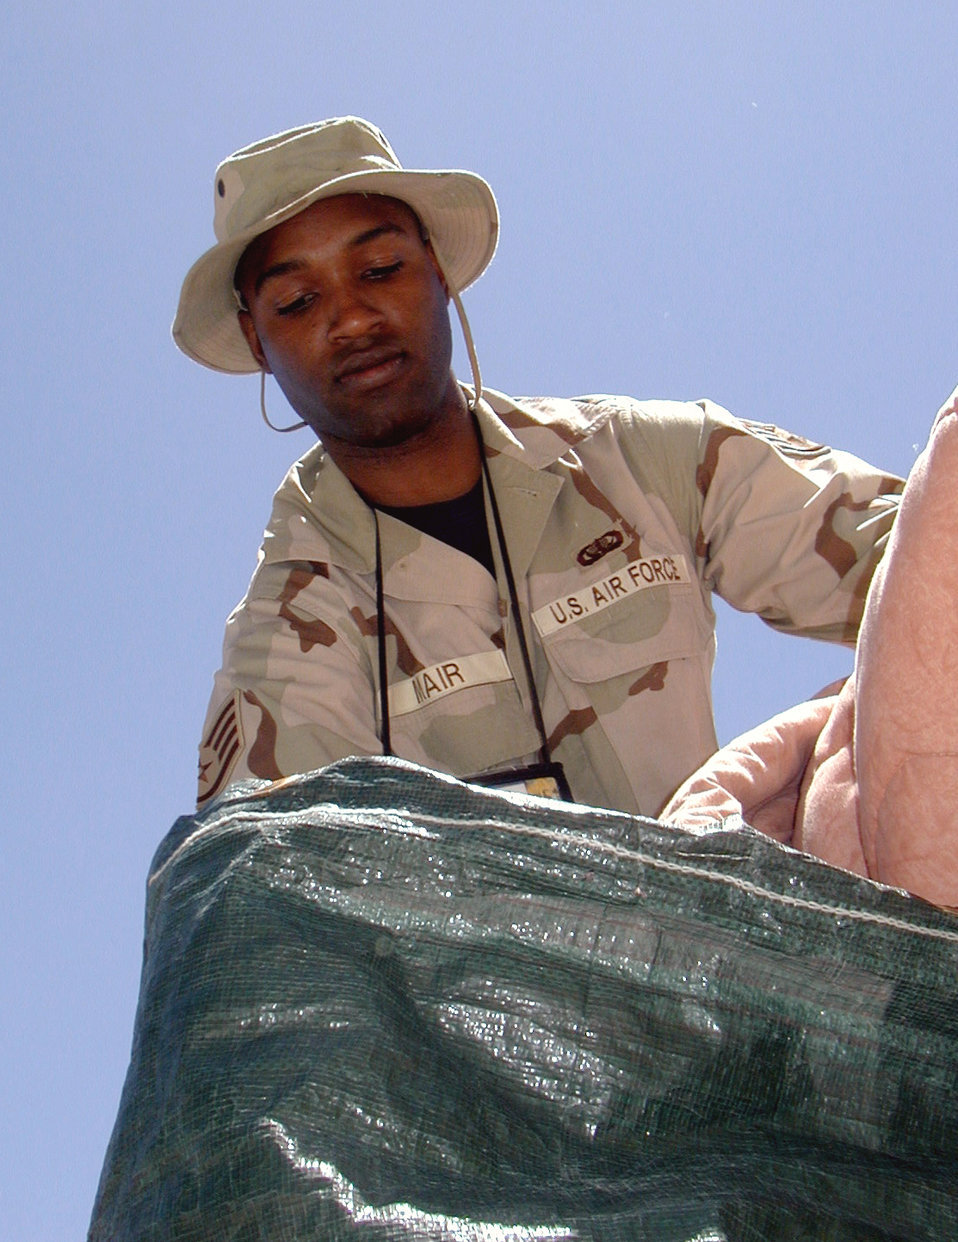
Laundry day

OPERATION ENDURING FREEDOM -- Staff Sgt. Damian Mair sorts bed comforters before taking them to laundry services on Bagram Air Base, Afghanistan. Mair is assigned to the base's 455th Expeditionary Operations Group's services unit. The sergeant and his co-workers are getting ready for incoming people as Air and Space Expeditionary Forces 1 and 2 prepare to rotate into the area of responsibility.